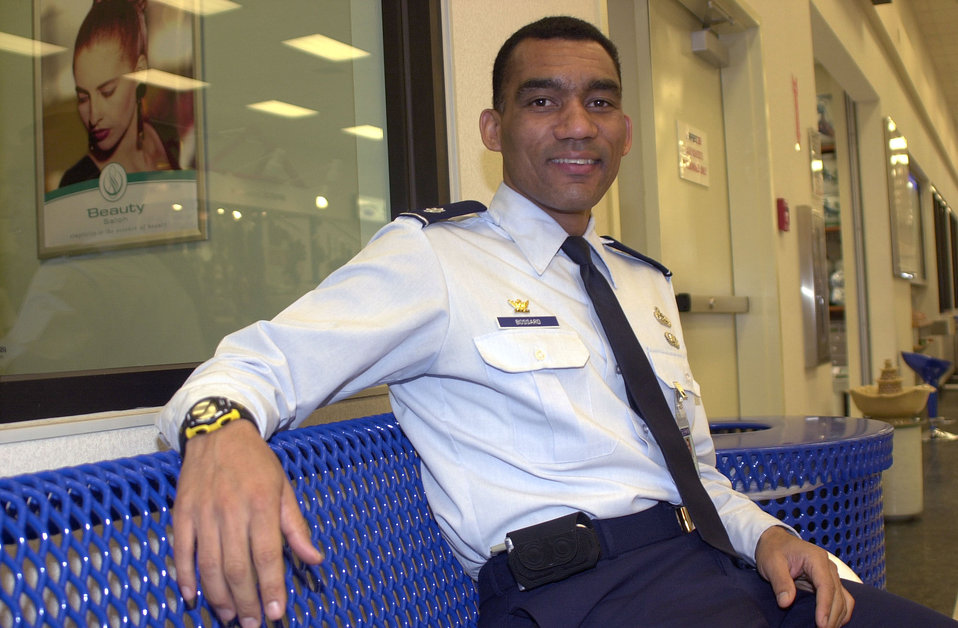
Air Force officer teaches at Korean Air University

Lt. Col. Andrew